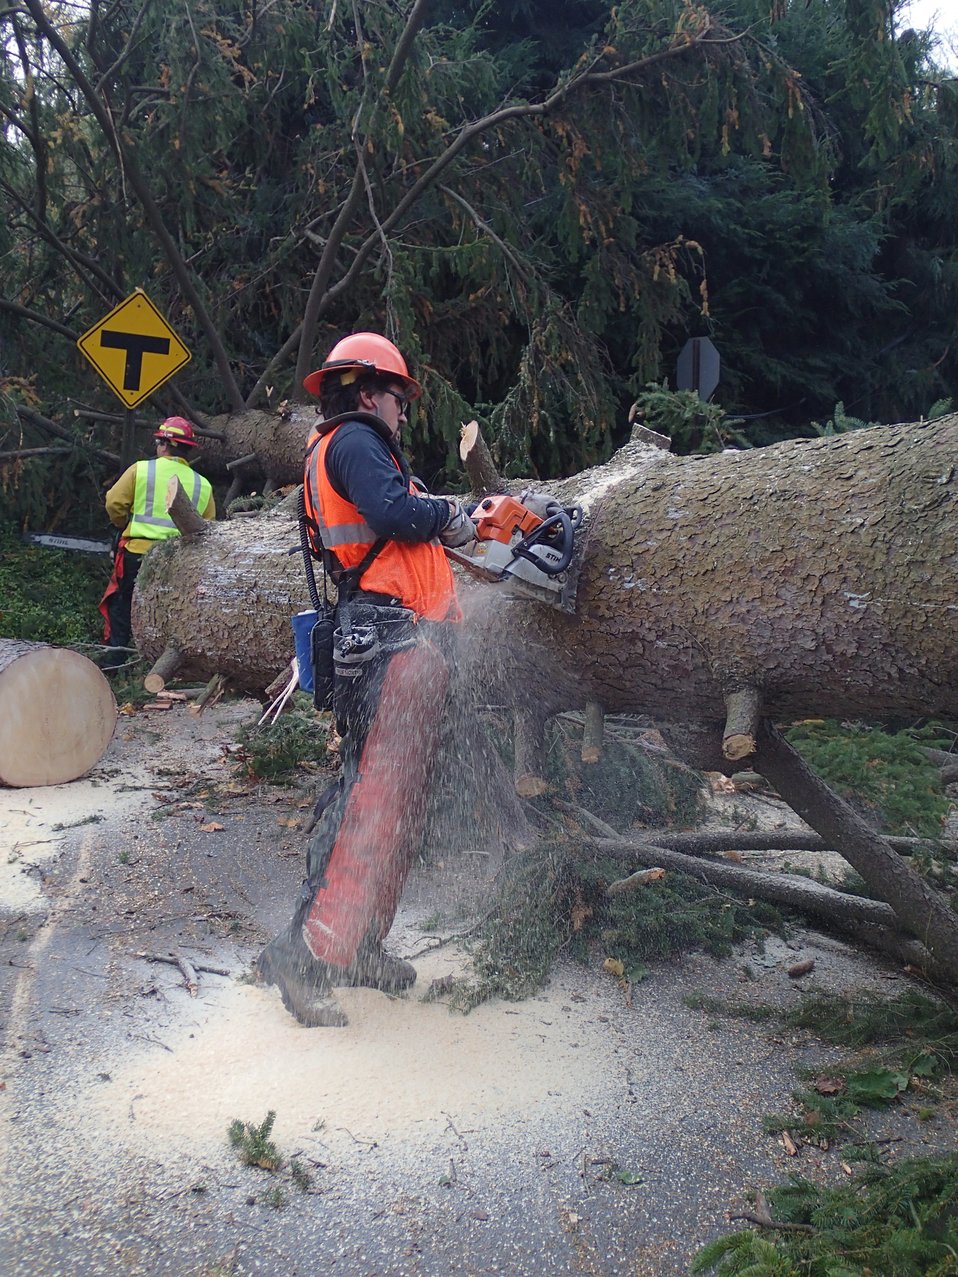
fs5

U.S. Forest Service and Minnesota state Department of Natural Resources crews work in Connecticut on Nov. 1, 2012. The crews are helping to open roads for local emergency responders and distribution of supplies.